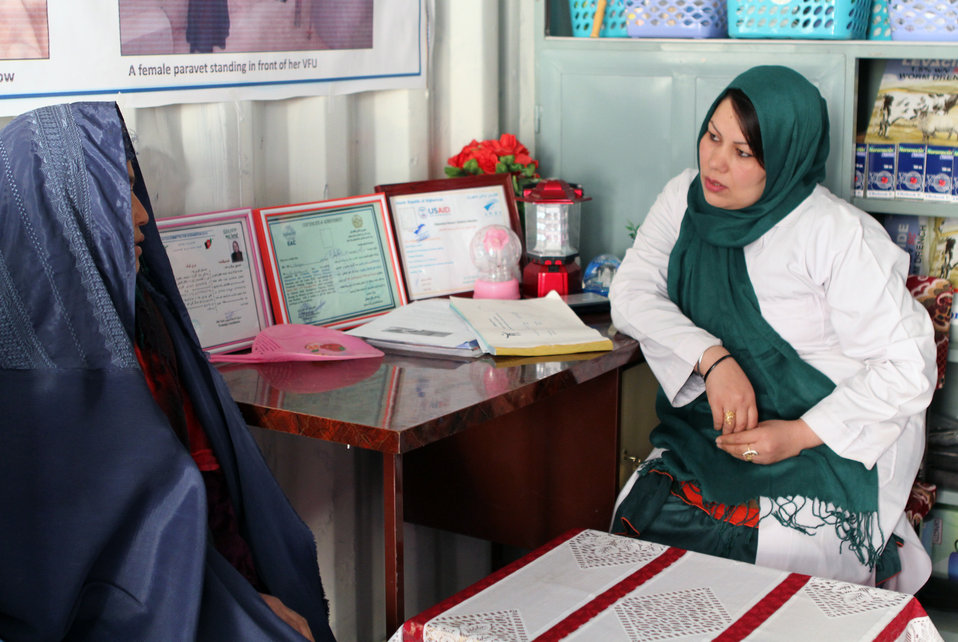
Development of Veterinary...